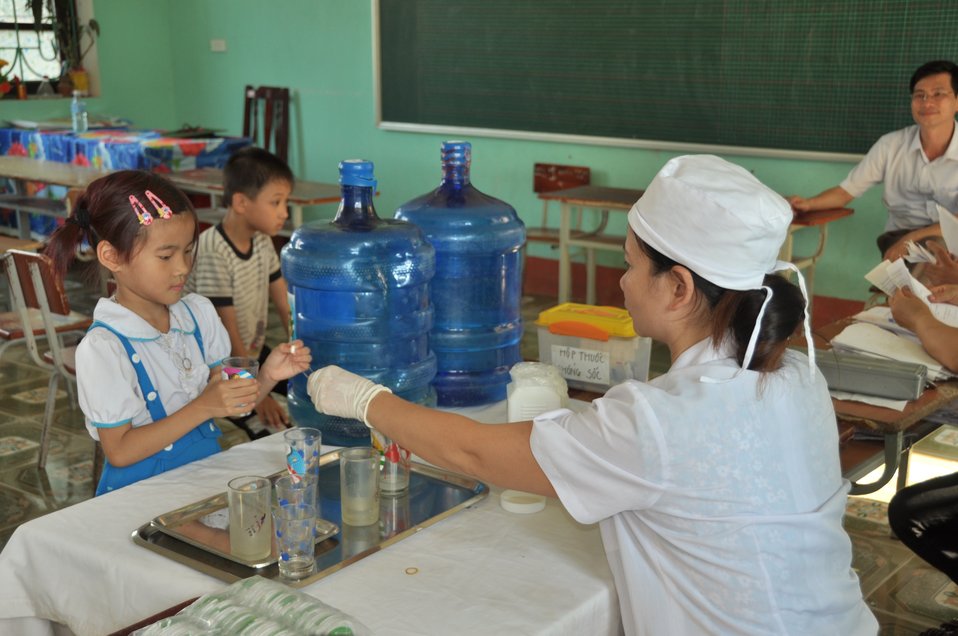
USAID supports deworming education and medication distribution in Bac Giang Province

May 20, 2013